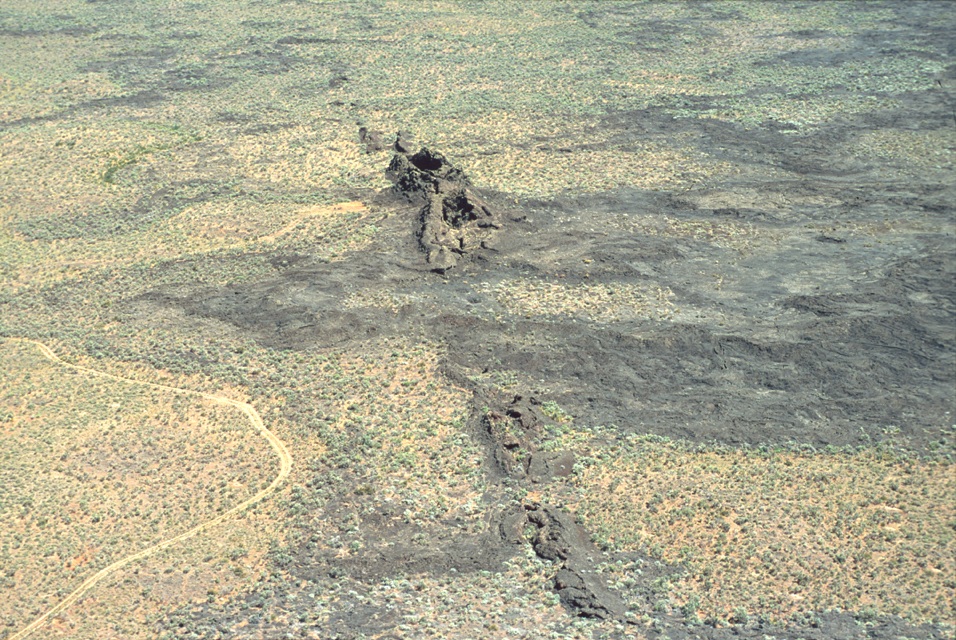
Shoshone Field Office USRD Upper Snake River District